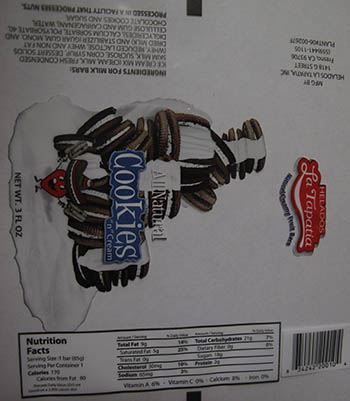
RECALLED – Ice cream products

March 19, 2014 – Product Recall – Helados La Tapatia, Inc. Recalls Products Because of Possible Health Risk.